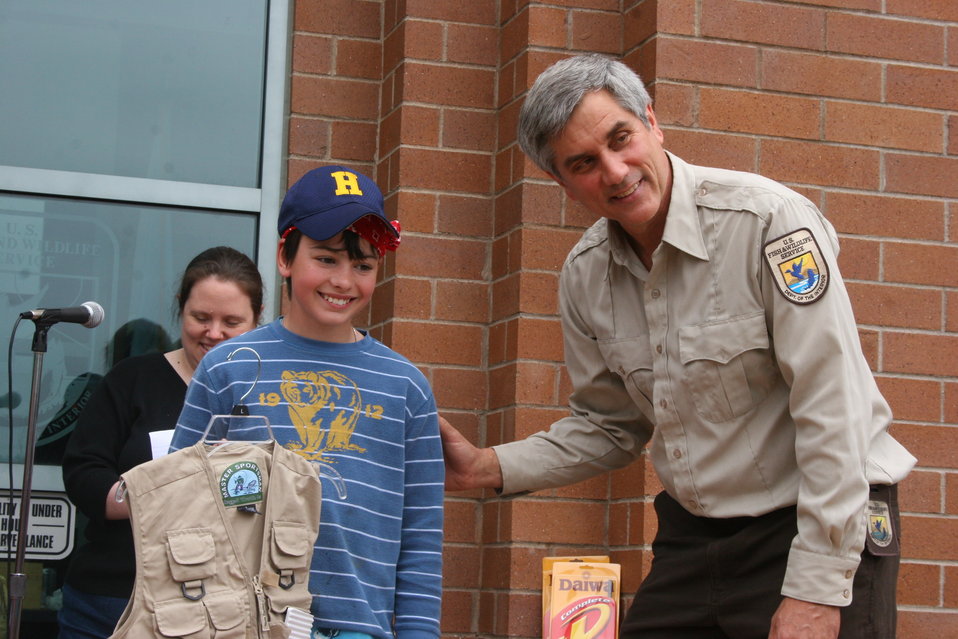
Winner

Fishing event at U.S. Fish and Wildlife Service Regional Office in Hadley, MA